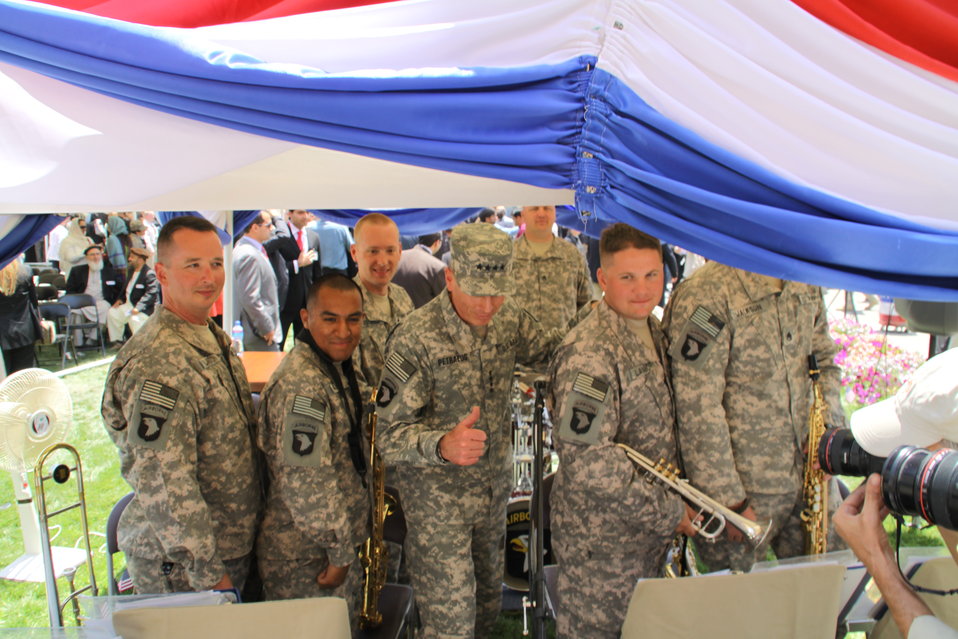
Kabul Official July 4th Celebration